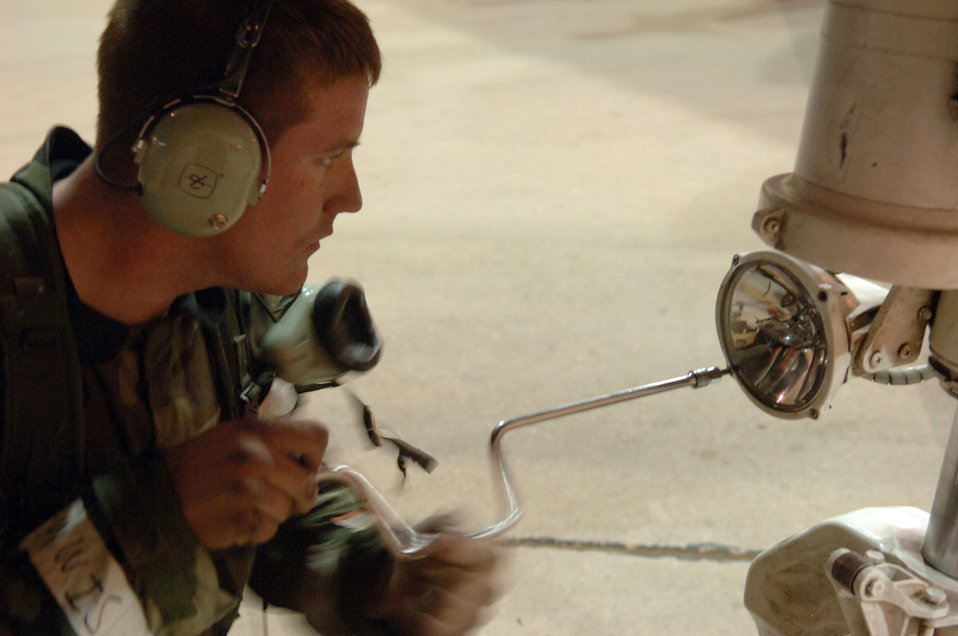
Exercise Bushwacker 06-02

Airman 1st Class Clayton Callison changes the headlight on an A-10 Thunderbolt II waiting to taxi on Monday, April 3, 2006, at Davis-Monthan Air Force Base, Ariz. The headlight malfunctioned during start-up flight procedures. Airman Callison is with the 355th Aircraft Maintenance Squadron.